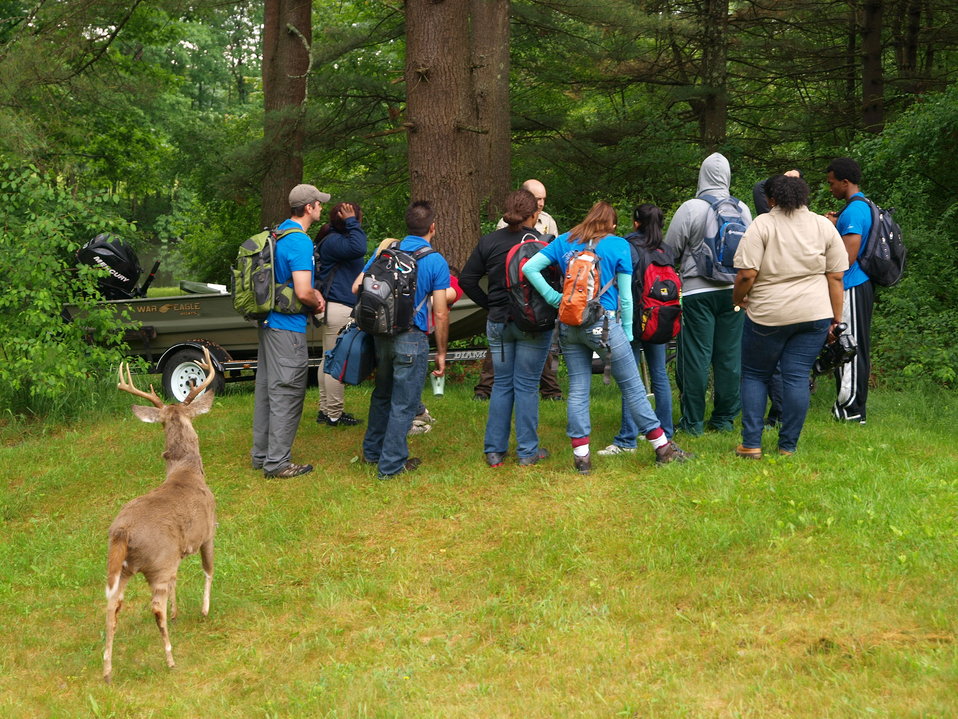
Law Enforcement Units

Law enforcement officers talk to interns about their field and what they do with their motorcontrolled deer in the foreground.